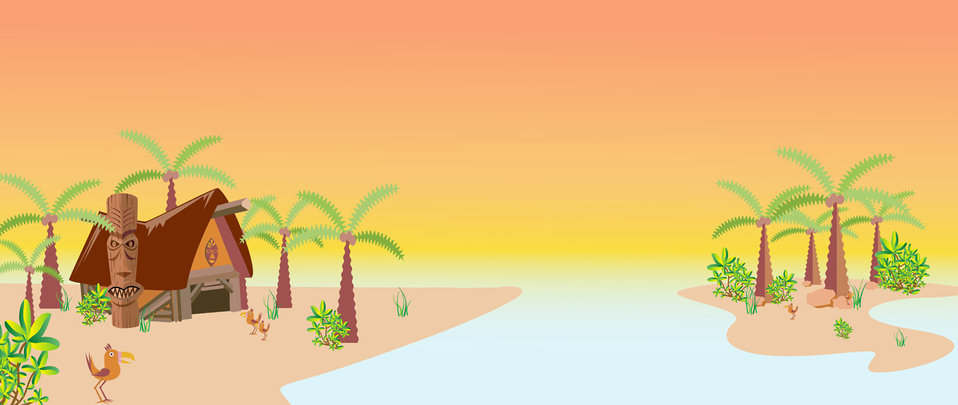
Tropical world with a hut, palm trees, birds and a totem poles.